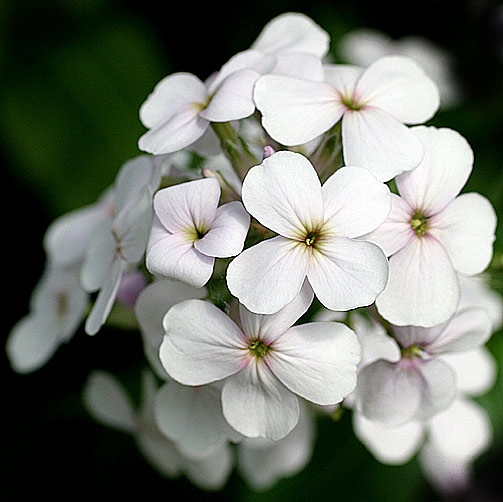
Self made picture of Hesperis matronalis.